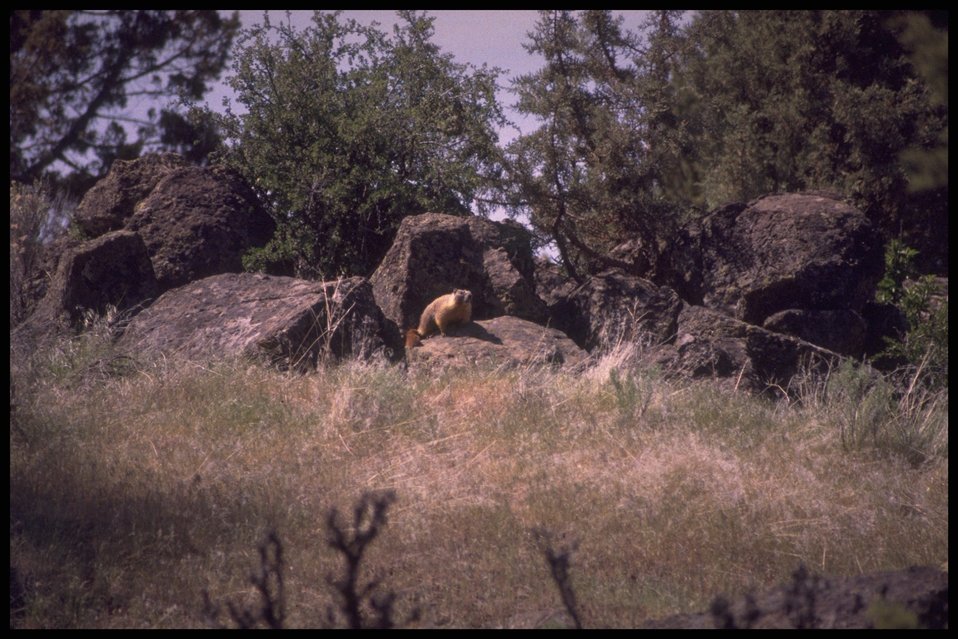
Far shot of Rock Chuck, Lakeview District.